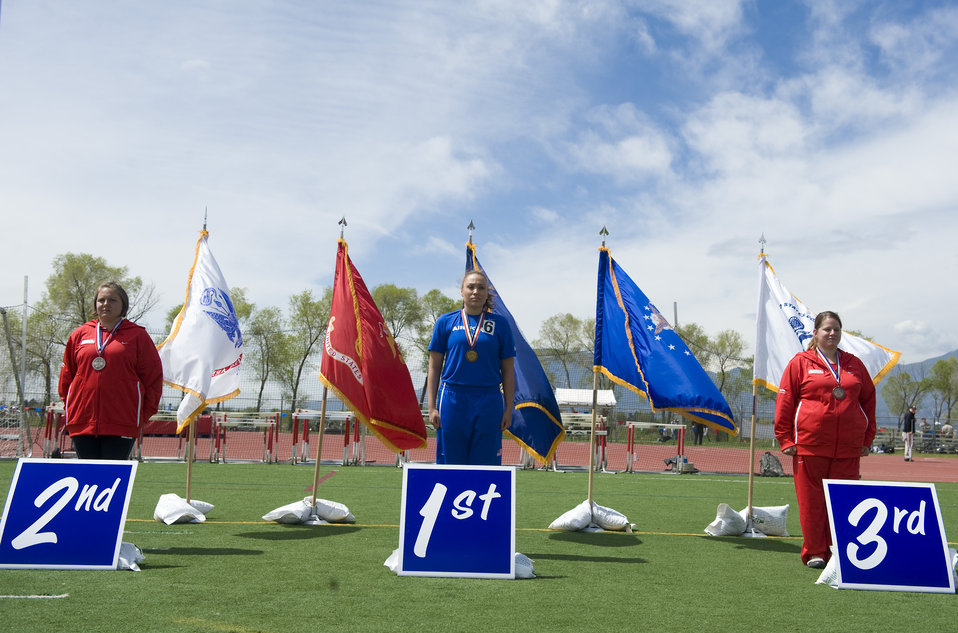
2011 Warrior Games

Air Force athlete Jennifer Stone receives a gold medal during the track and field competition May 17, 2011, at the 2011 Warrior Games in Colorado Springs, Colo. The track and field events kicked off the games, which continue throughout the week.